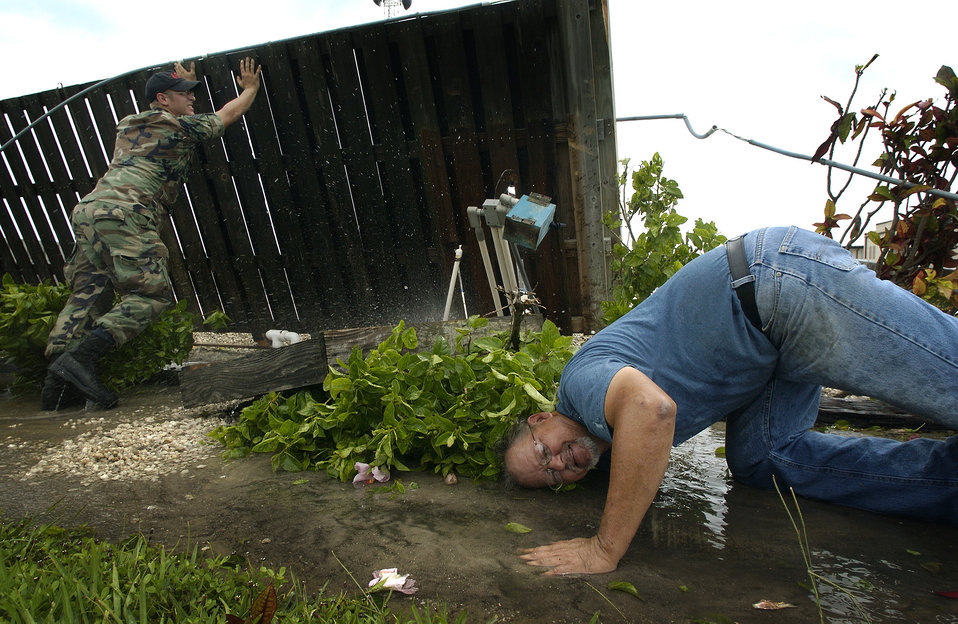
Hurricane Frances

PATRICK AIR FORCE BASE, Fla. -- Phil Hyde helps shut off a broken waterline Sept. 6 during recovery operations here. The waterline broke as a result of Hurricane Frances, which hit the base and the surrounding community. Mr. Hyde is a plumber with the 45th Civil Engineer Squadron.